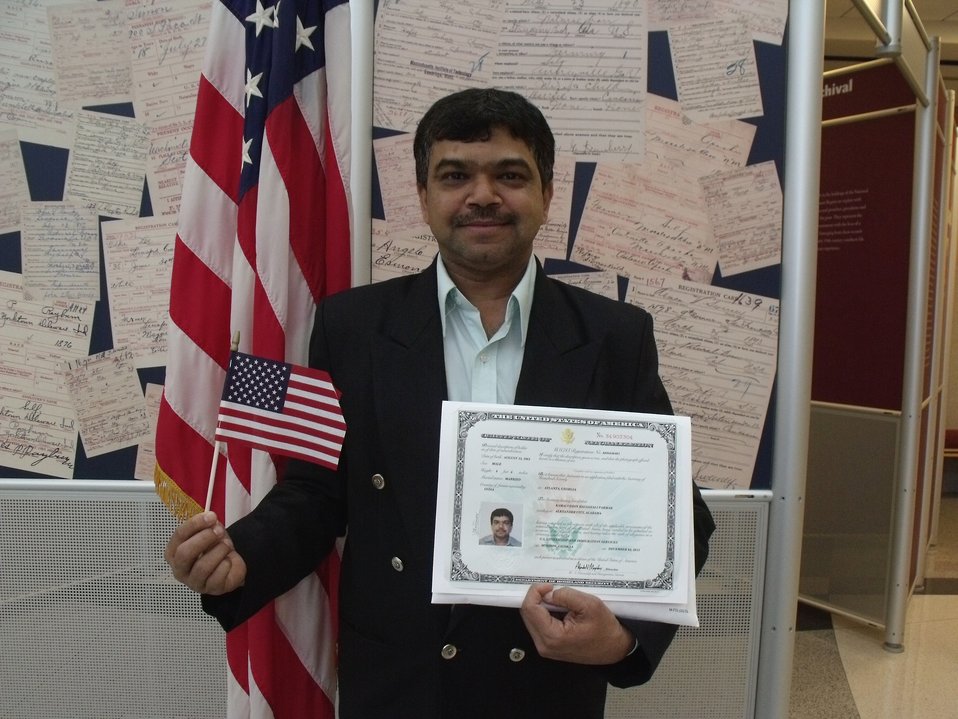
New Citizens